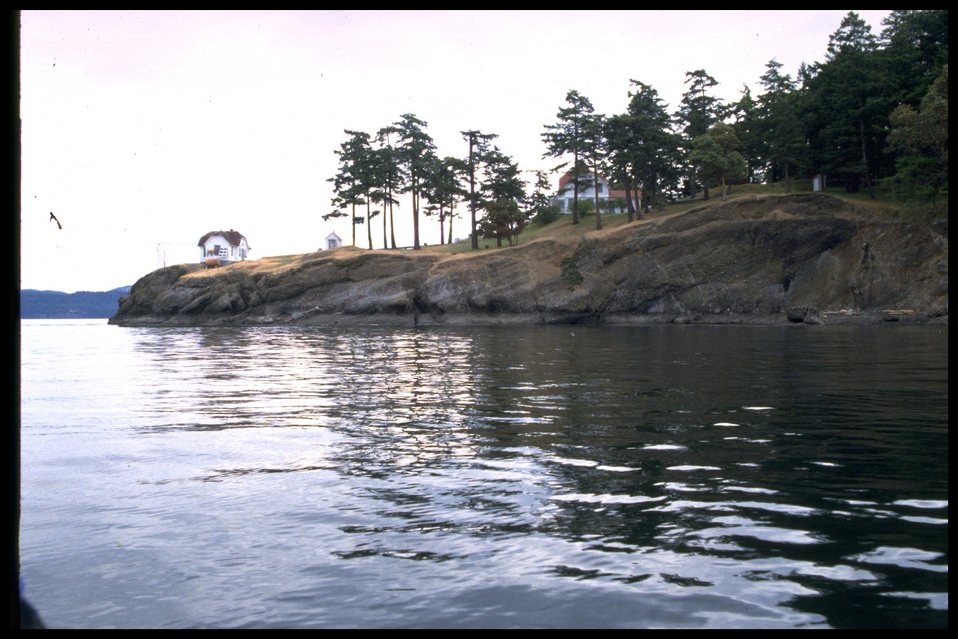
Turn Point from water with light station and buildings. Series of 17 photos.